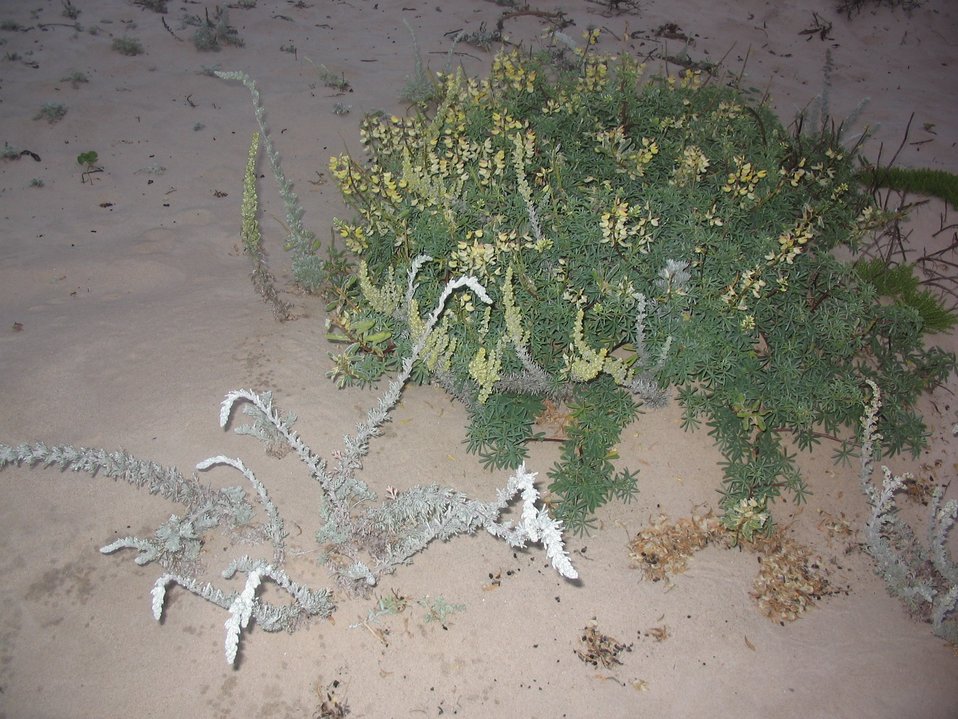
Beach sagewort (Artemesia pycnocephala) in foreground growing in close proximity to tree lupine bush.